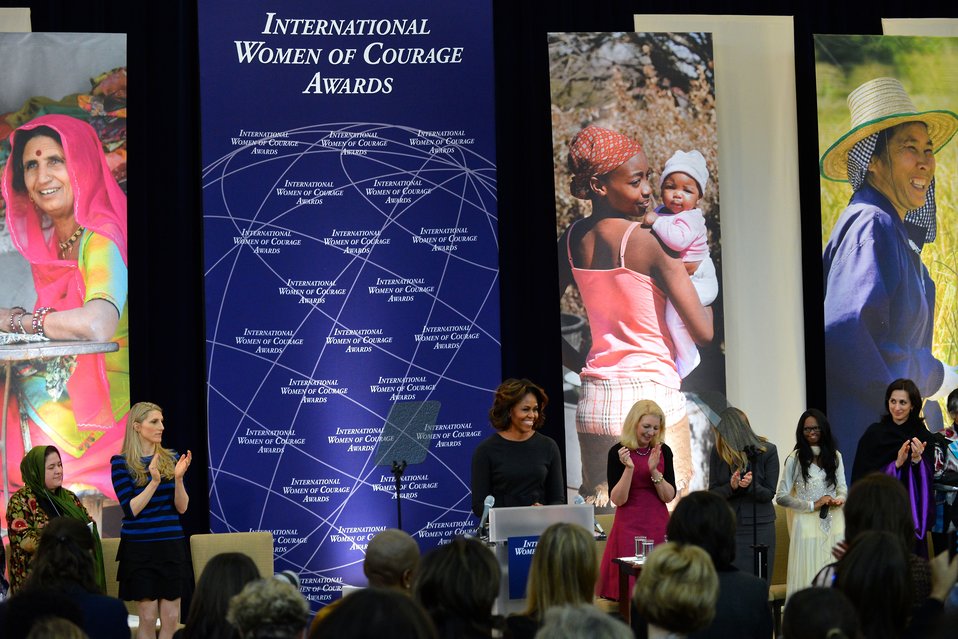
First Lady Michelle Obama Honors the International Women of Courage

First Lady Michelle Obama honors extraordinary women from 10 countries with the 2014 Secretary of State’s International Women of Courage Award at the U.S. Department of State in Washington, D.C., on March 4, 2014.